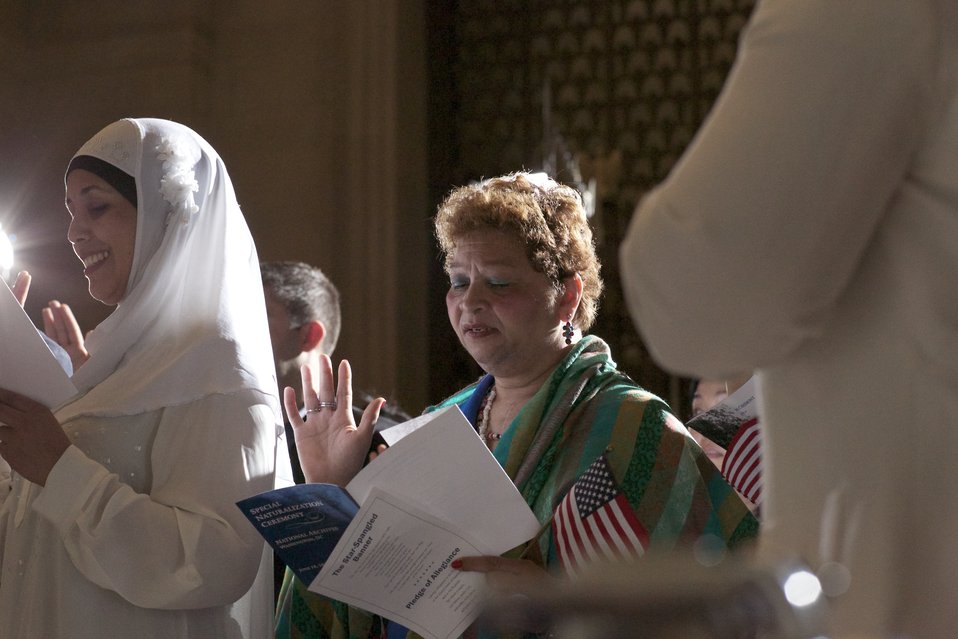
Naturalization Ceremony with Michelle Obama